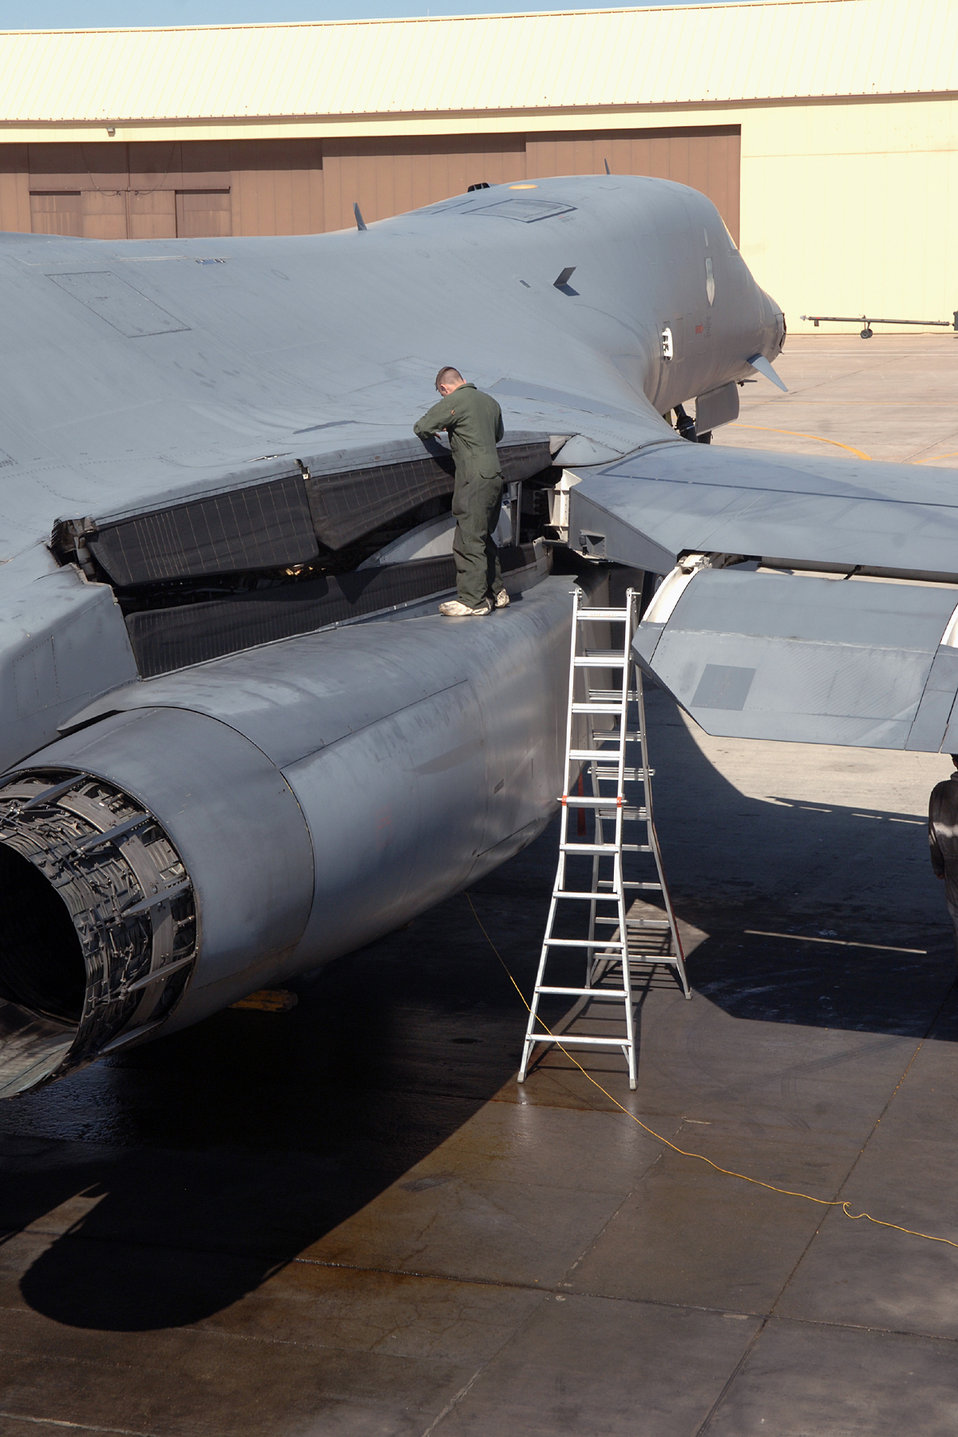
Maintenance inspection

Staff Sgt. Zachariah Ellis performs a structural maintenance inspection on Monday, April 17, 2006, at Ellsworth Air Force Base, S.D. Sergeant Ellis is with the 28th Maintenance Squadron.